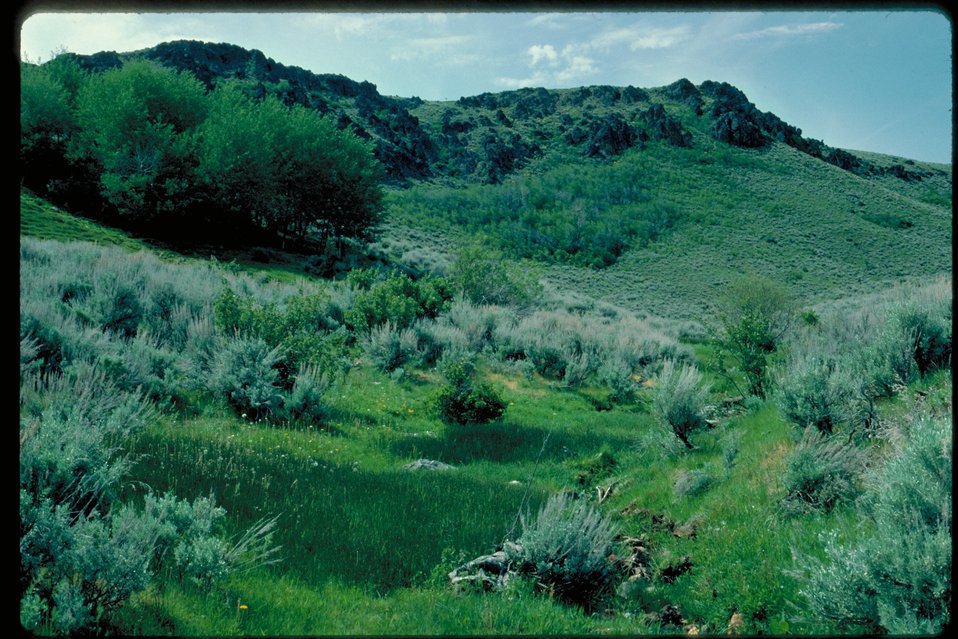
Oregon Trail Cottonwood Spring Lower Snake River District